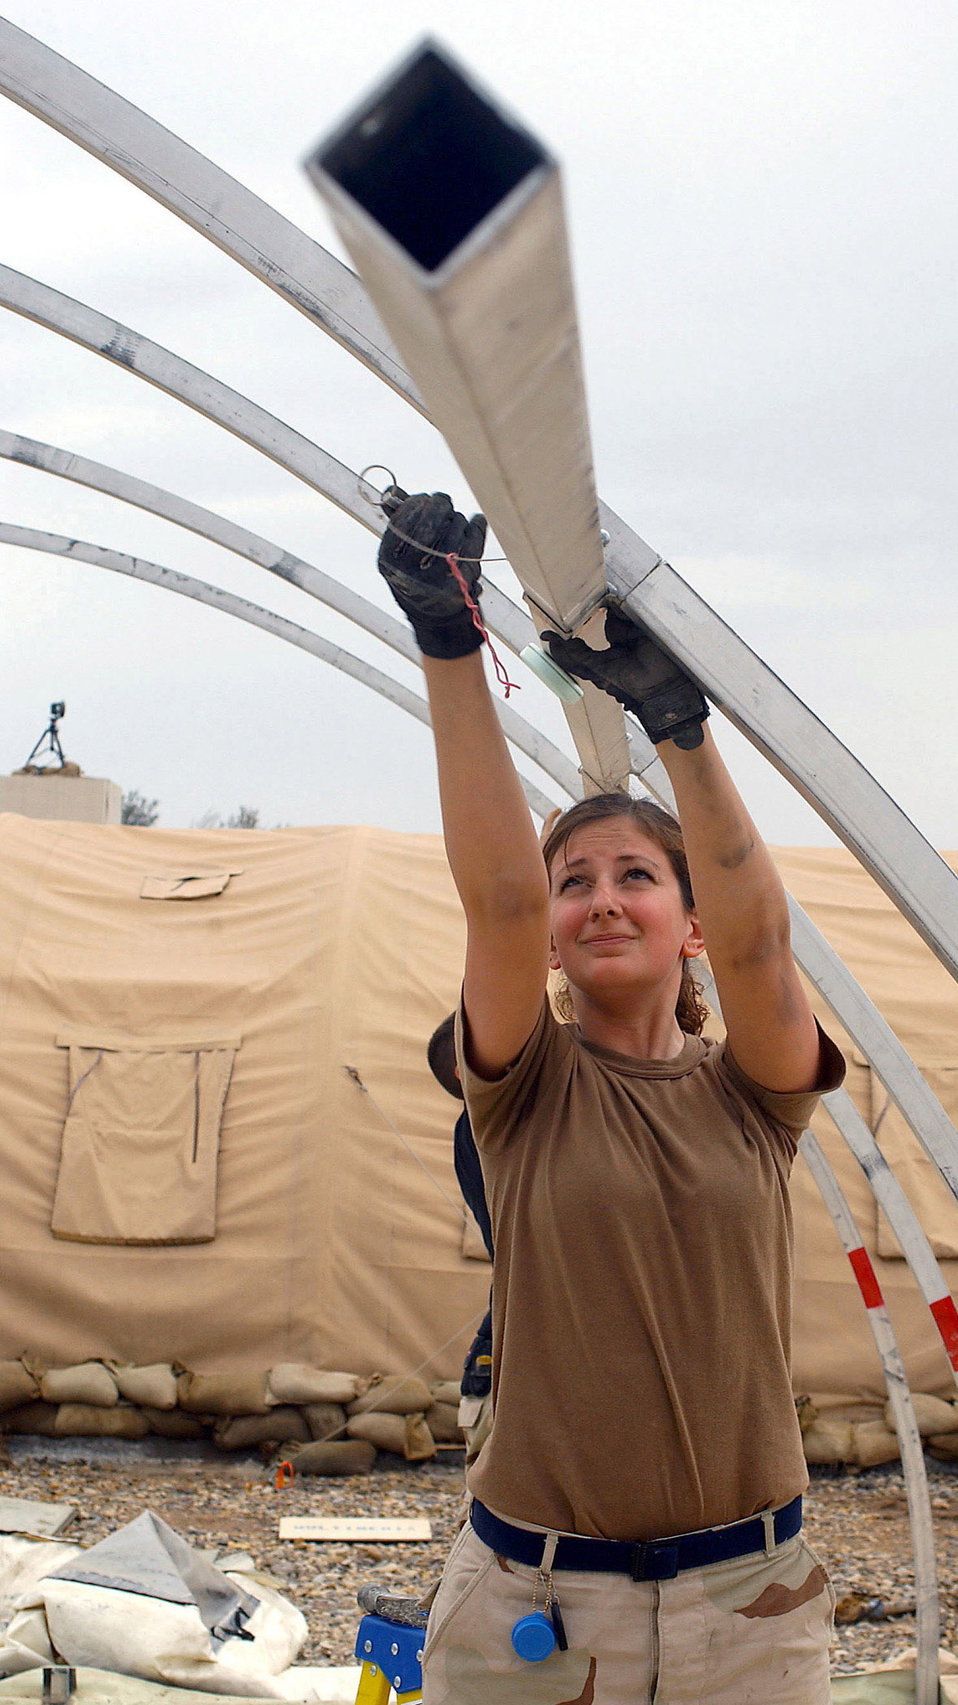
I've been framed

TALLIL AIR BASE, Iraq -- Airman 1st Class Danielle Alyias removes the retaining pin from the frame of a shelter here. She is a structural journeyman from the 319th Civil Engineer Squadron at Grand Forks Air Force Base, N.D.